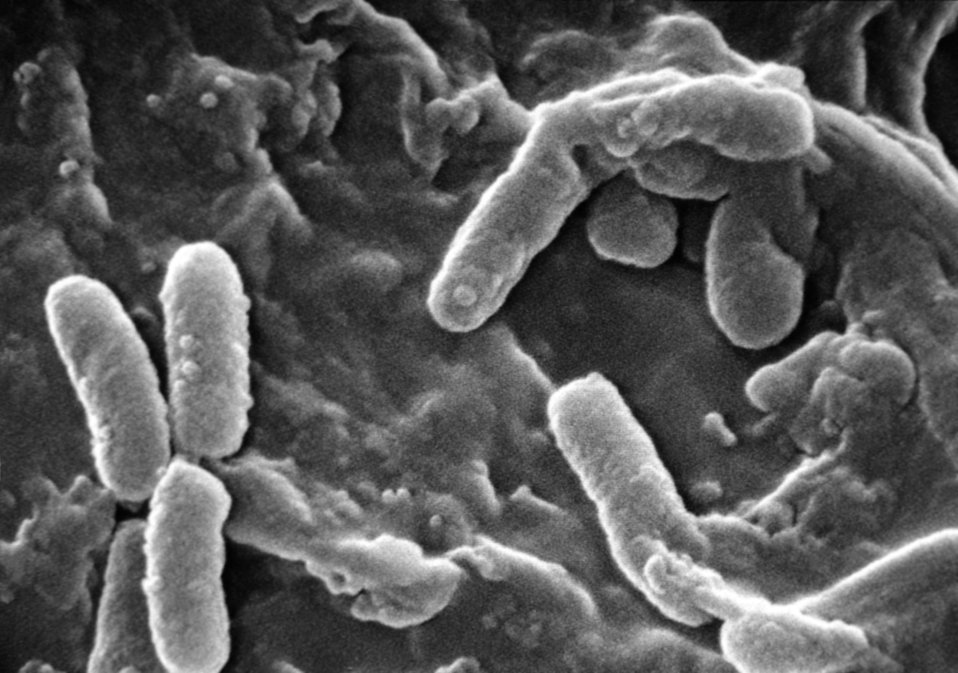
Scanning electron micrograph (SEM) of Pseudomonas aeruginosa bacteria.